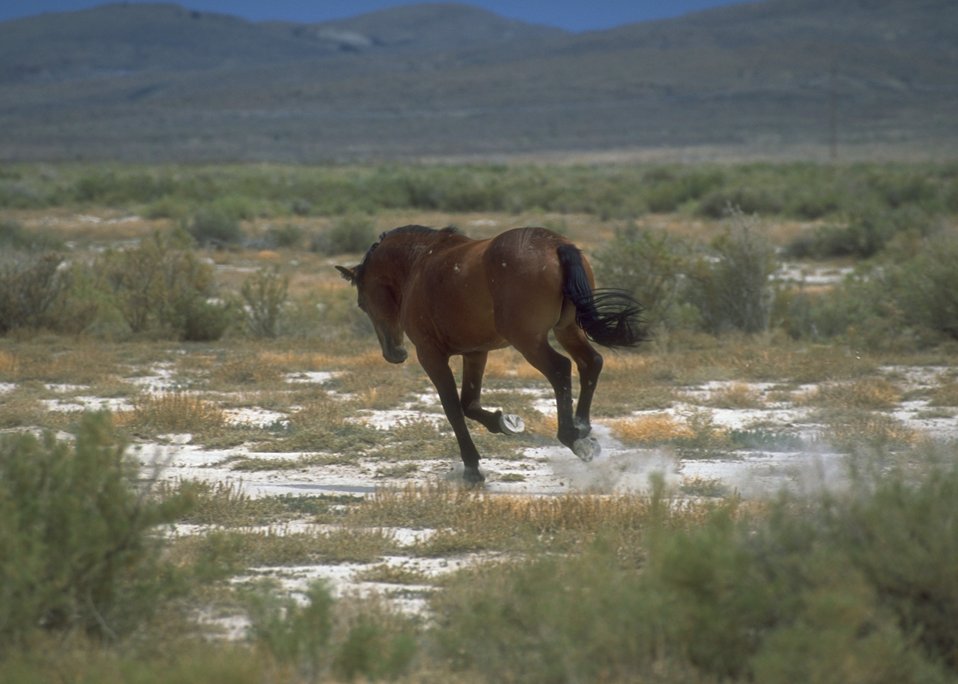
Wild horses, Rock Springs Field Office.